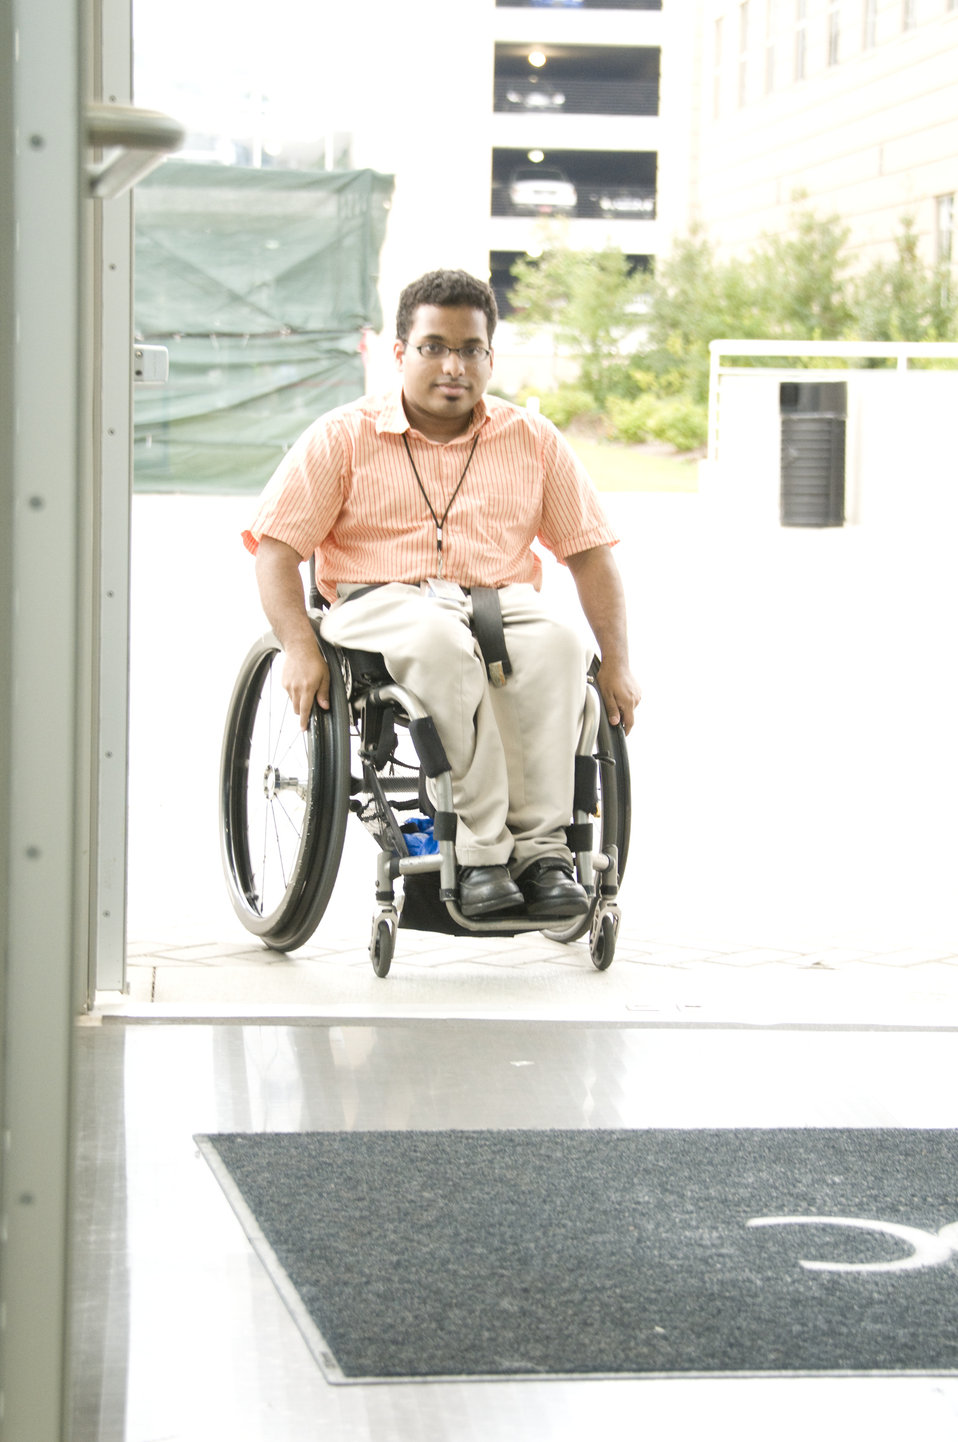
The man depicted here was in the process of entering a building on one of the Centers for Disease Control and Prevention's (CDC) campuses. He was seated in a wheelchair after having triggered the mechanized doors to open by using an easily-accessible push button door switch-pad.